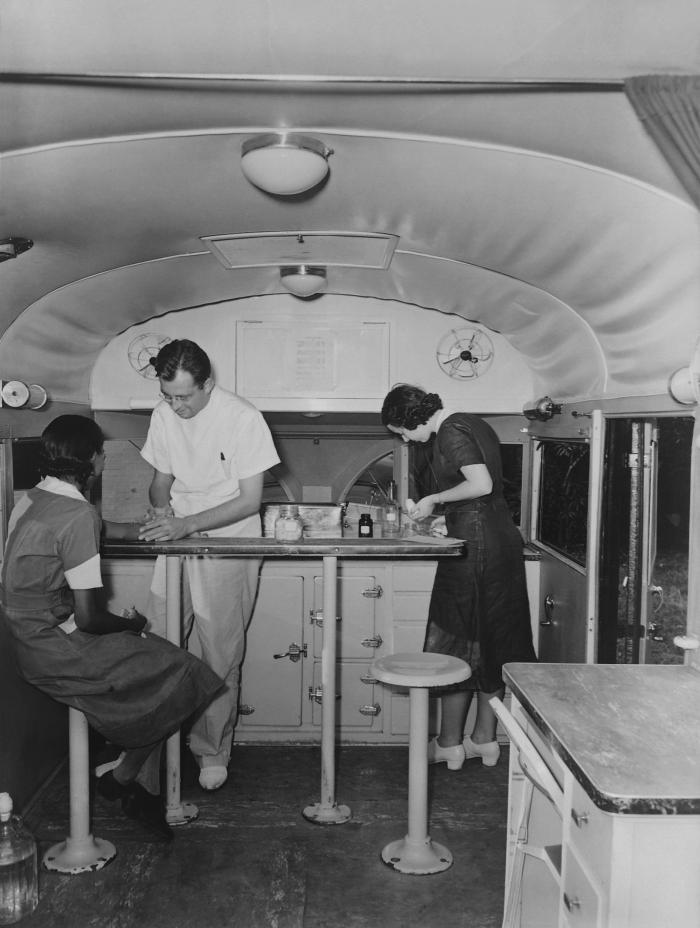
This historic image depicted the front end interior of a mobile trailer clinic, which was fully equipped with electric sterilizers, refrigerators, treatment table and a an office desk. In this particular view, a clinician was treating what appears to be the left arm of a clinic visitor.